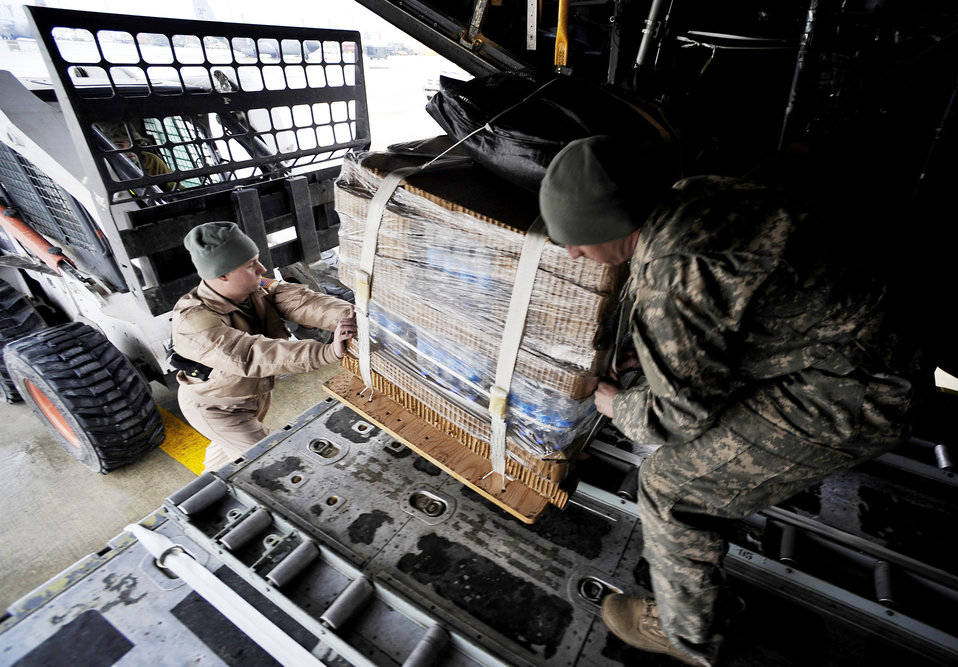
C-130 low-cost, low-altitude combat airdrops now operational

Master Sgt. Clay Holt helps Army Sgt. Matthew Davenport load a C-130 Hercules with low-cost, low-altitude resupply bundles Feb. 6, 2010, in Afghanistan. Sergeant Holt is a loadmaster with the 774th Expeditionary Airlift Squadron at Bagram Airfield, Afghanistan. Sergeant Davenport is an out-load NCO assigned to Combined Joint Special Operations Task Force Afghanistan.